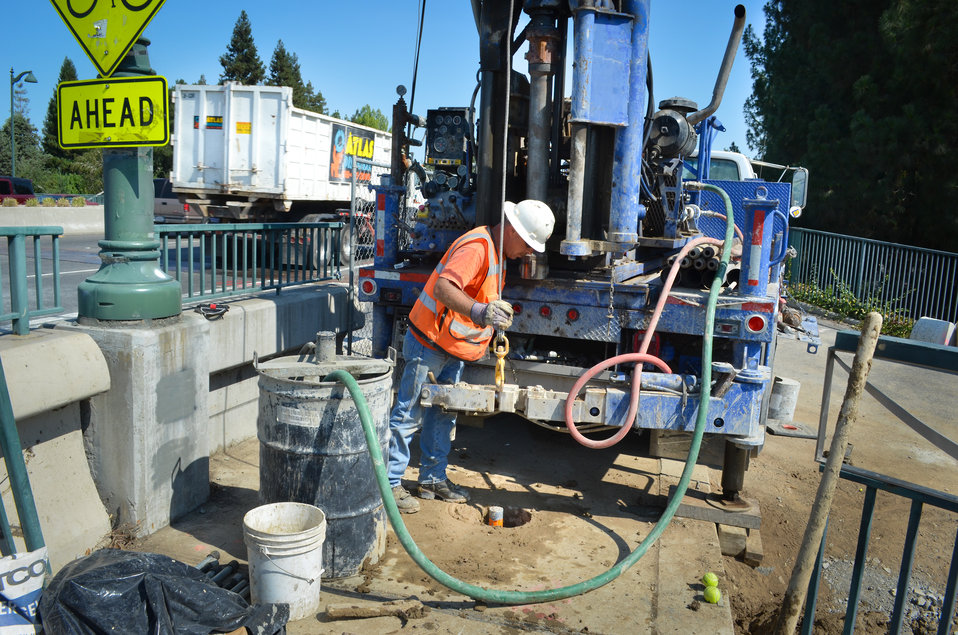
Corps contractor inspects borehole near Watt Avenue bridge

A contractor for the U.S. Army Corps of Engineers Sacramento District inspects a newly-drilled hole on the Watt Avenue bridge in Sacramento Calif., July 25, 2013. Holes across the bridge provide access to the levee beneath, where crews will install a seepage cutoff wall.